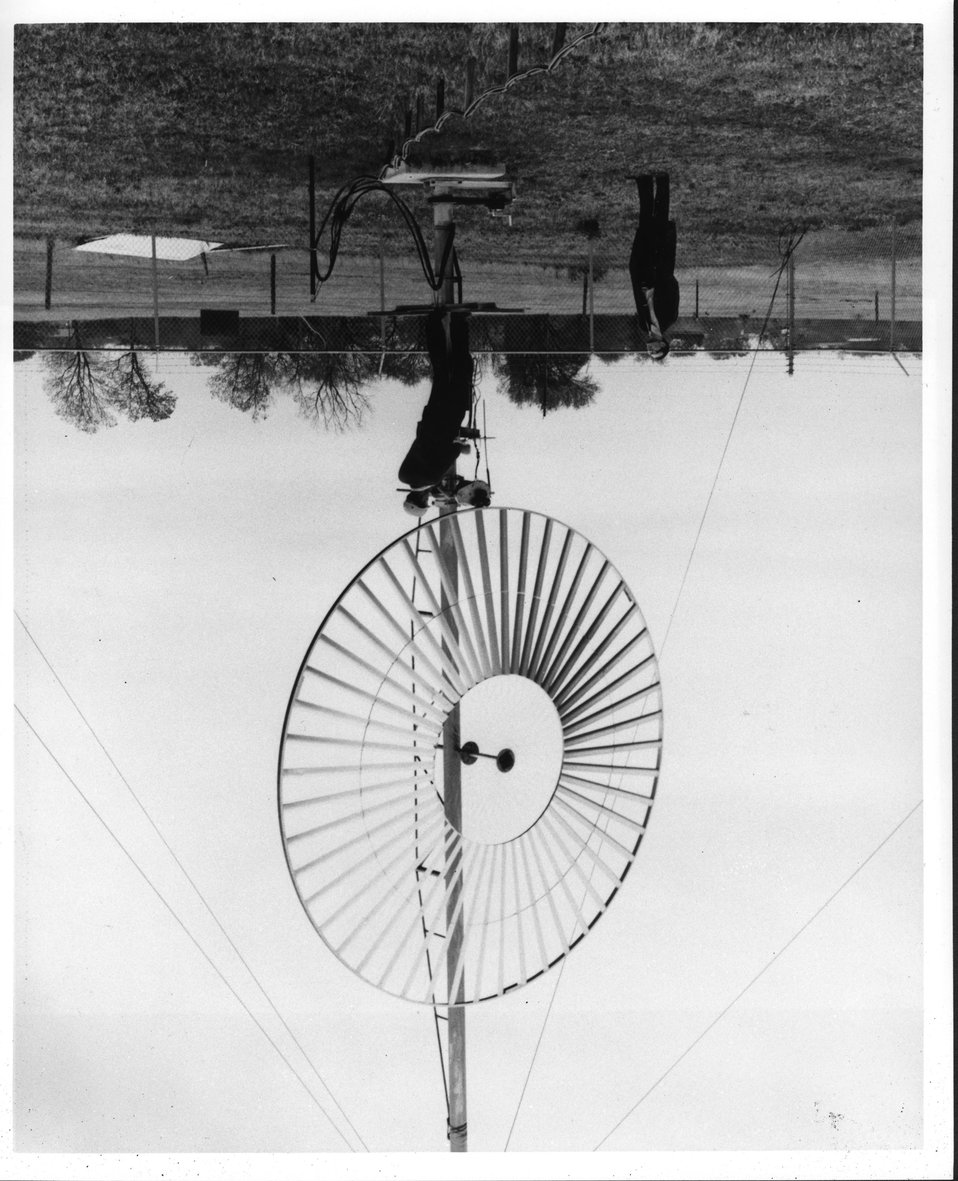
Scientists at Oklahoma State University, Stillwater, Oklahoma, are testing windmill resembling a bicycle wheel for the U.S. Department of Energy. c. 1975